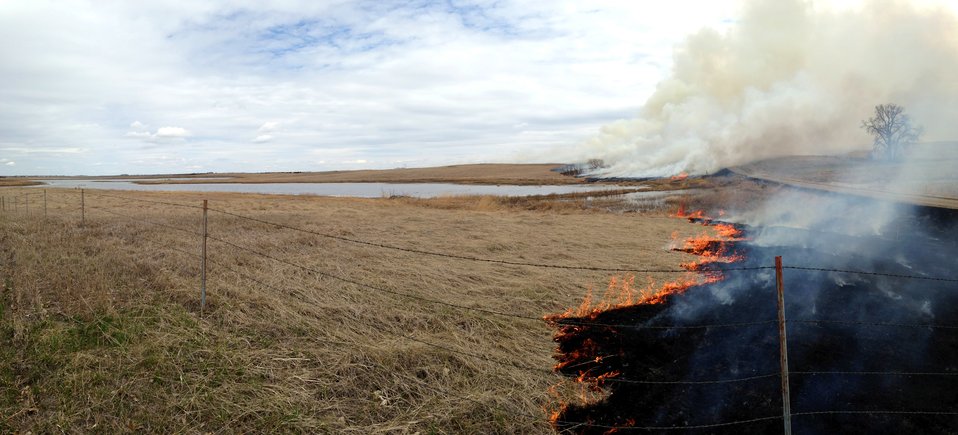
Backing Fire

This fire was intentionally lit during a prescribed burn on the Rau Waterfowl Production Area of the Sand Lake Wetland Management District of South Dakota. Prairie ecosystems and plants adapted with the frequent wildfires before human settlement, and they are an important part of maintaining good habitat. They remove excess litter and dead plant growth, opening up the canopy for new seedlings; they stimulate the growth of native plants, and they set back the invasion of non-native grasses and some weeds. The ash from a fire also adds nutrients for new plant growth. The fire in this photo was lit from the downwind side, so it is described as 'backing'. It is slowly burning into the wind and has shorter flame lengths compared to its opposite--a head fire.